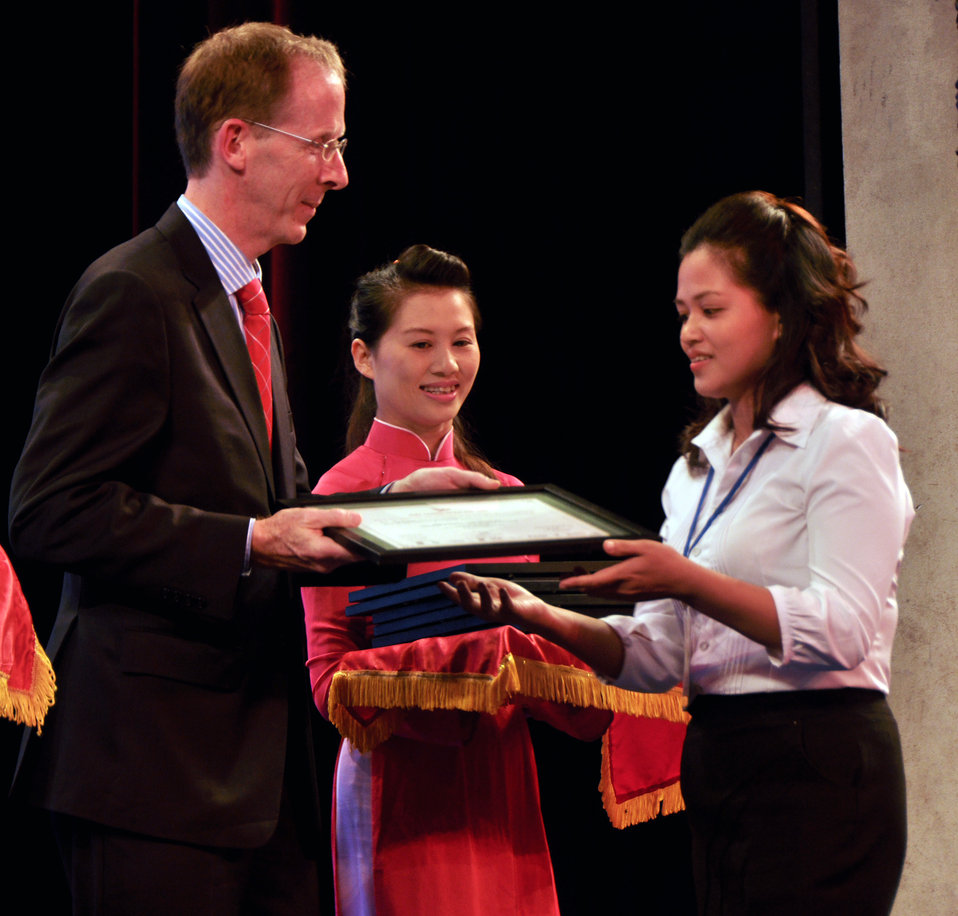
Vietnam Women Innovation Day 2013

USAID Mission Director Joakim Parker awards prizes to winning innovative proposals.

Hanoi, October 2, 2013.